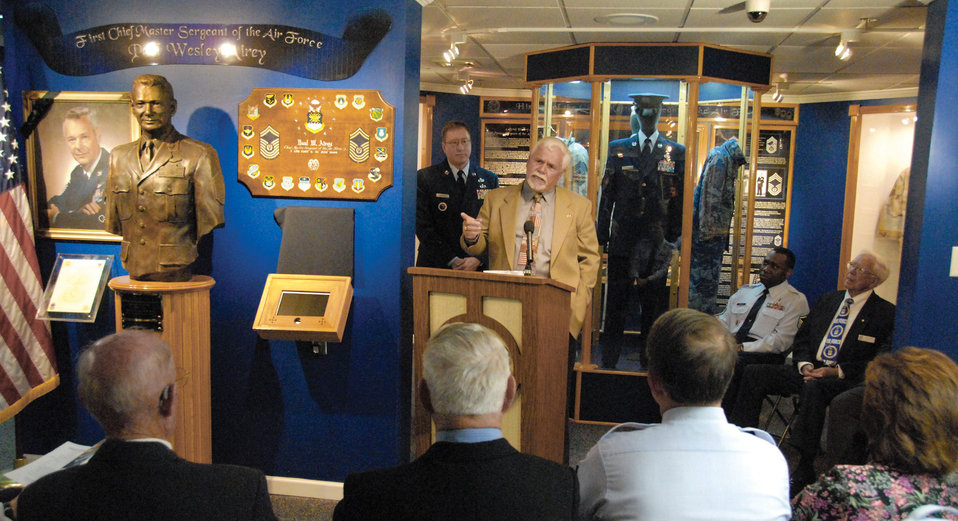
Enlisted Heritage Hall receives Airey CMSAF ring

Retired Chief Master Sgt. Dale Airey, son of the first Chief Master Sgt. of the Air Force Paul W. Airey, presented the Enlisted Heritage Hall his father's Chief Master Sgt. ring for display in a brief ceremony at Maxwell Air Force Base, Ala., April 30. In attendance were current Chief Master Sgt. of the Air Force Rodney McKinley, and former CMSAF's Robert Gaylor and Sam Parrish.